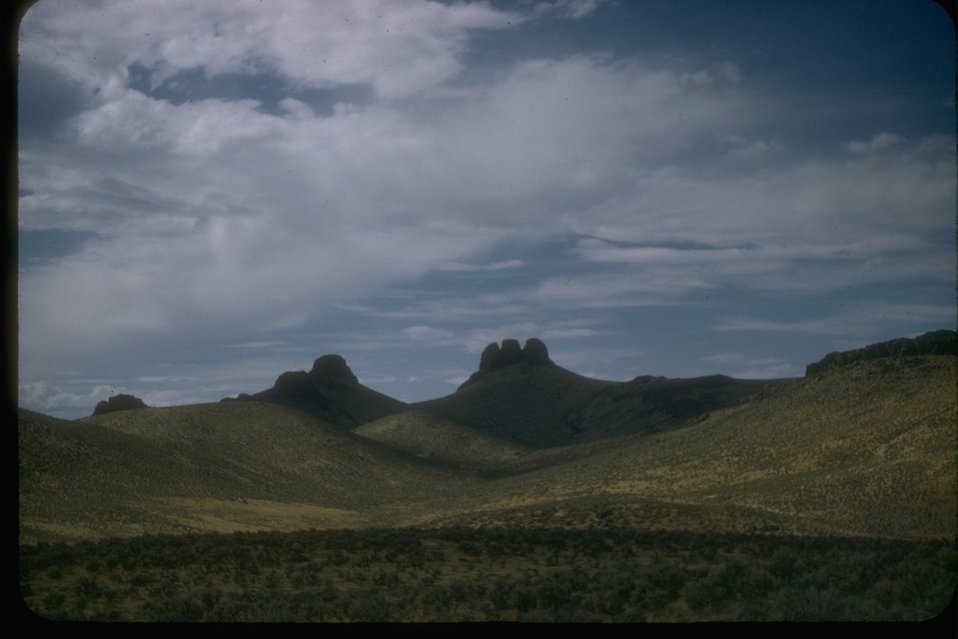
Scenic view of the 3 Fingers Area.